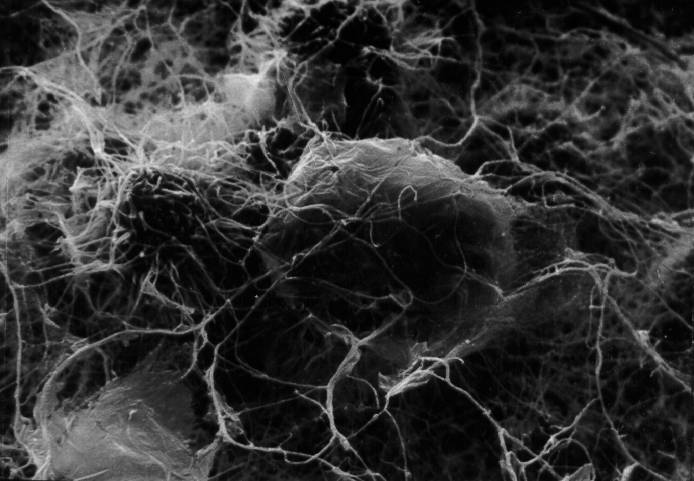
Scanning Electron Micrograph (SEM) of Curvularia lunata